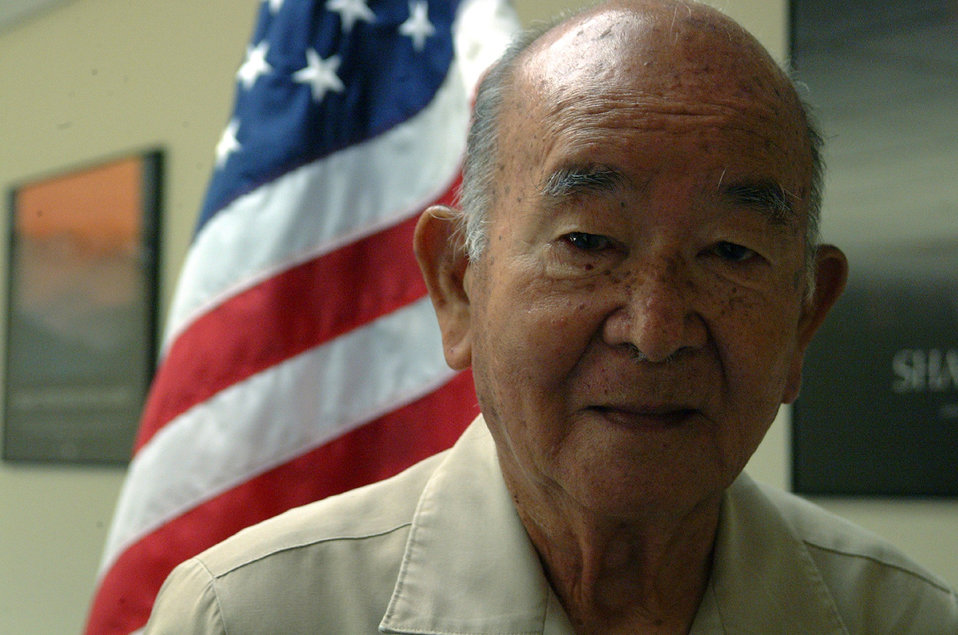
63 years of service

ANDERSEN AIR FORCE BASE, Guam -- Seikichi Kaneshiro, 83, has 63 years of combined federal service. He spent three years as a Soldier and 60 years as a civilian employee. He is the 36th Civil Engineer Squadron's vertical repair superintendent here.